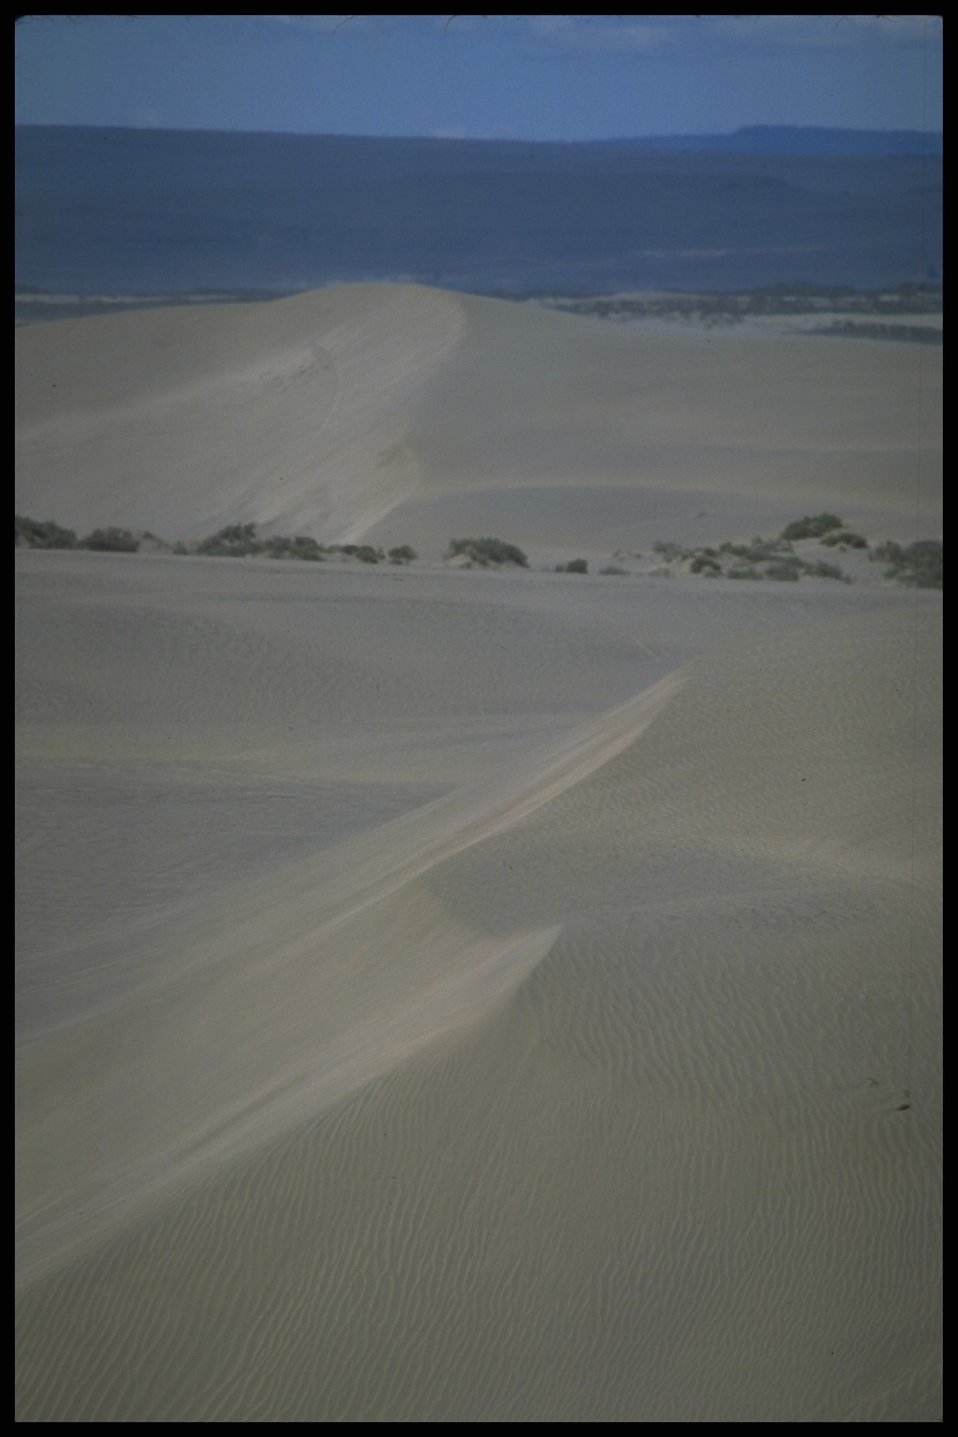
Scenic view of Sand Dunes in Christmas Valley, Lakeview District.